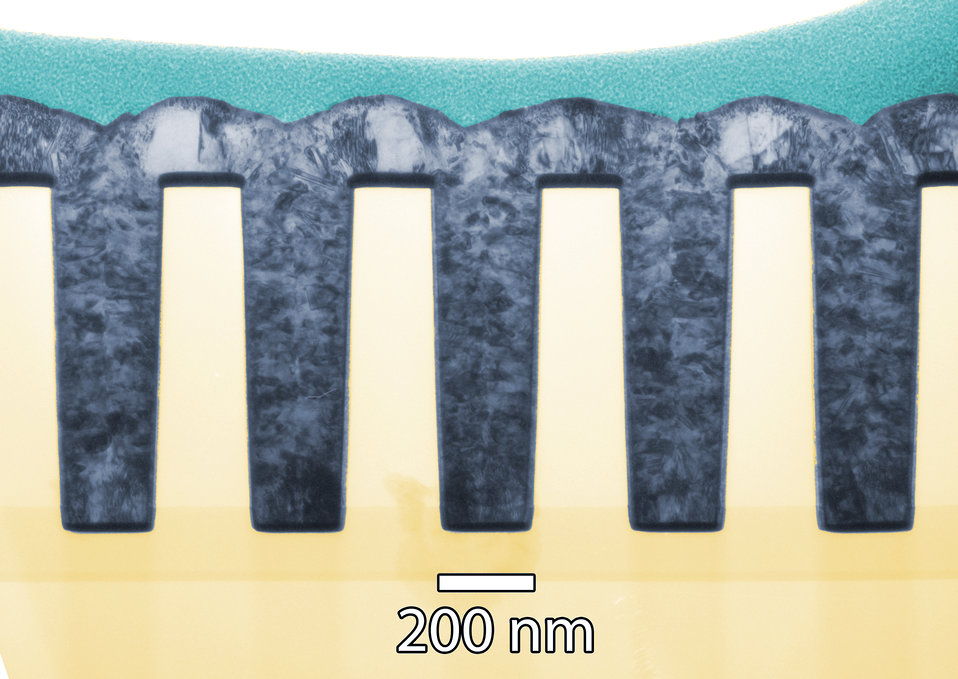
3-D Nanostructures

Working in the trenches: Transmission electron microscopy image of a thin cross section of 160 nanometer trenches shows deposited nickel completely filling the features without voids. (Color added for clarity.)